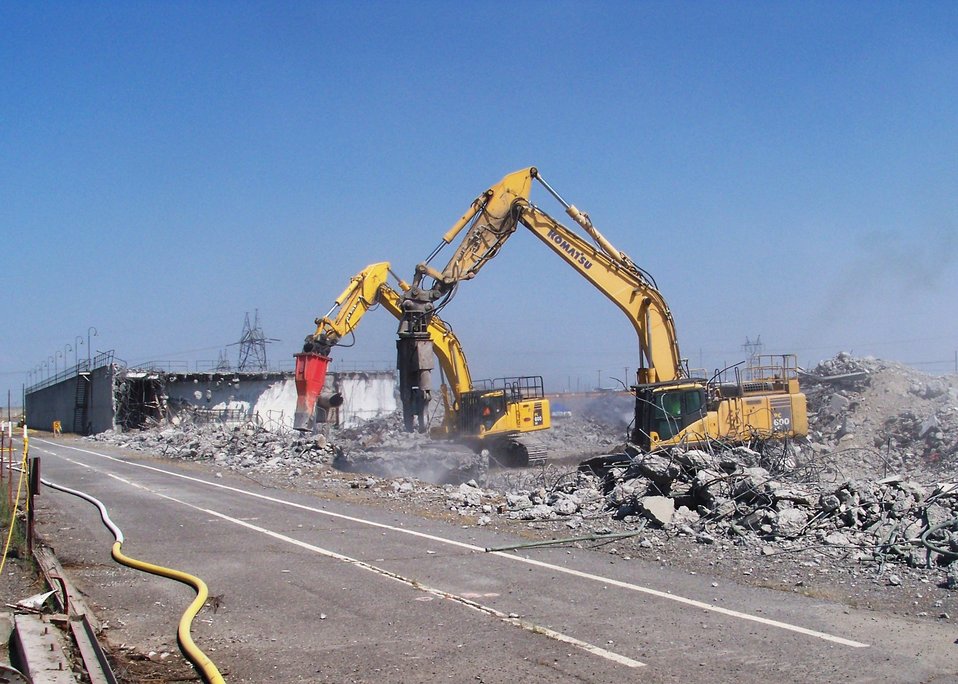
Recovery Act funds demolition of 380,000 Square Feet of Concrete Facilities near Columbia River

Demolition of the 100K West Reactor Water Treatment Facilities during the year-long Recovery Act-funded demolition effort.